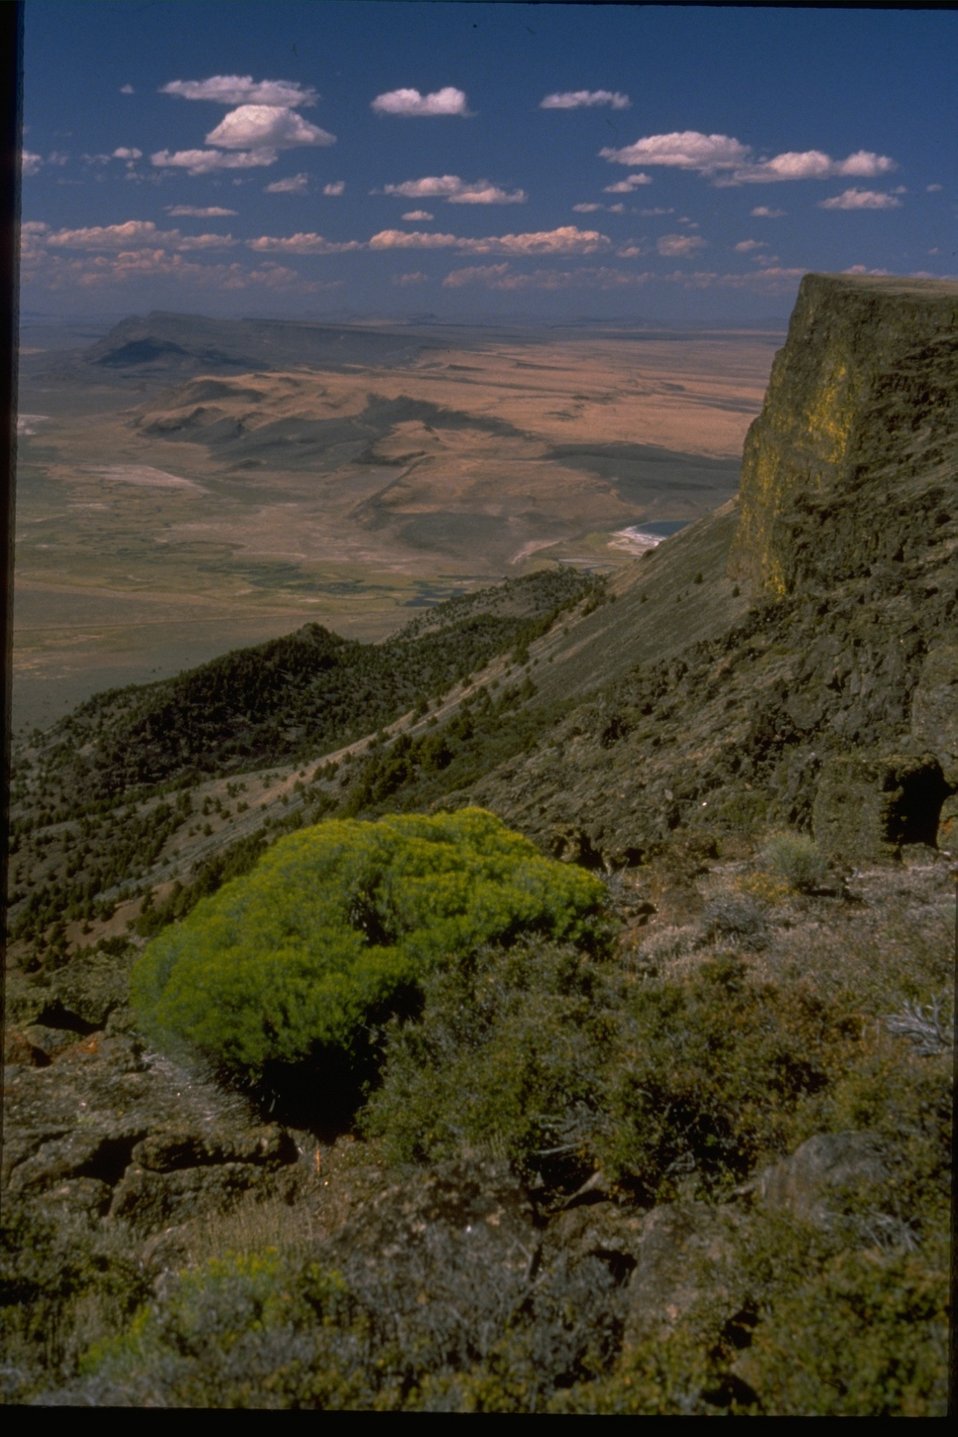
Scenic view of Abert Rim.